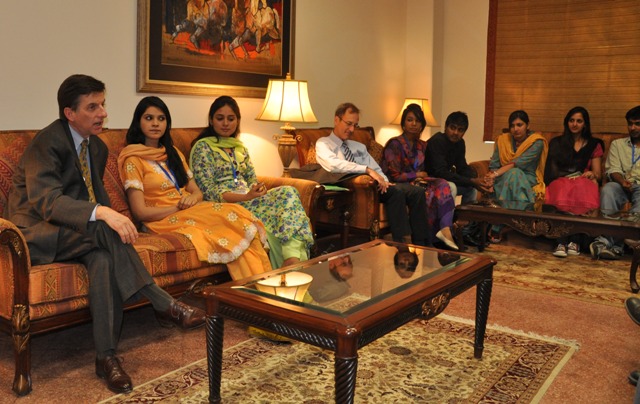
U.S. Agency for International Development (USAID) Mission Director Dr. Andrew Sisson talking to FCC students.